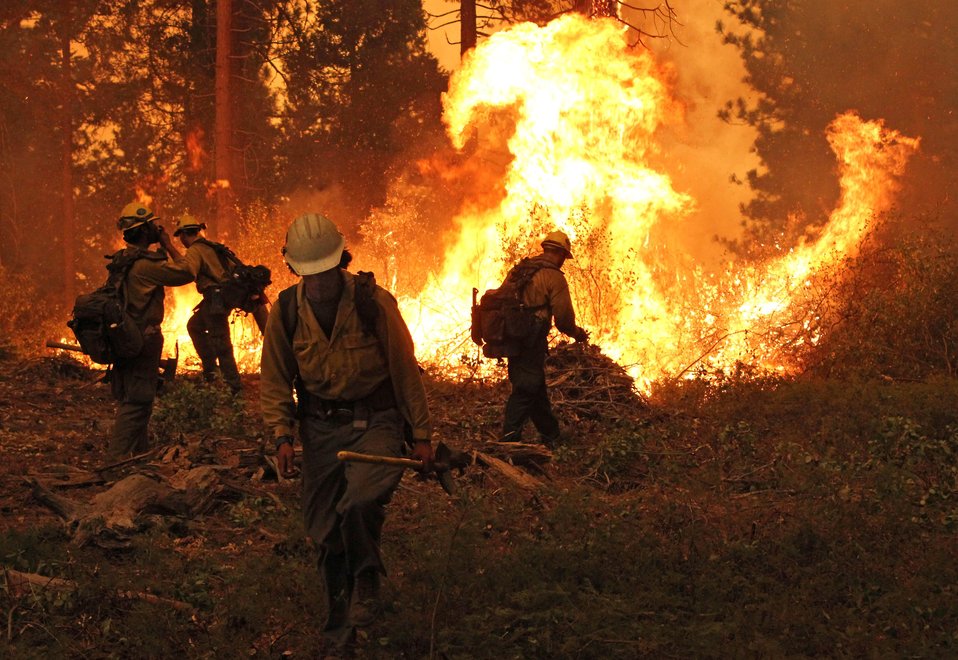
Silver State Interagency Hotshot Crew (IHC) at work on a burning operation at the Rim Fire. The Rim Fire in the Stanislaus National Forest near in California began on Aug. 17, 2013 and is under investigation. The fire has consumed approximately 253,332 acres and is 80% contained.